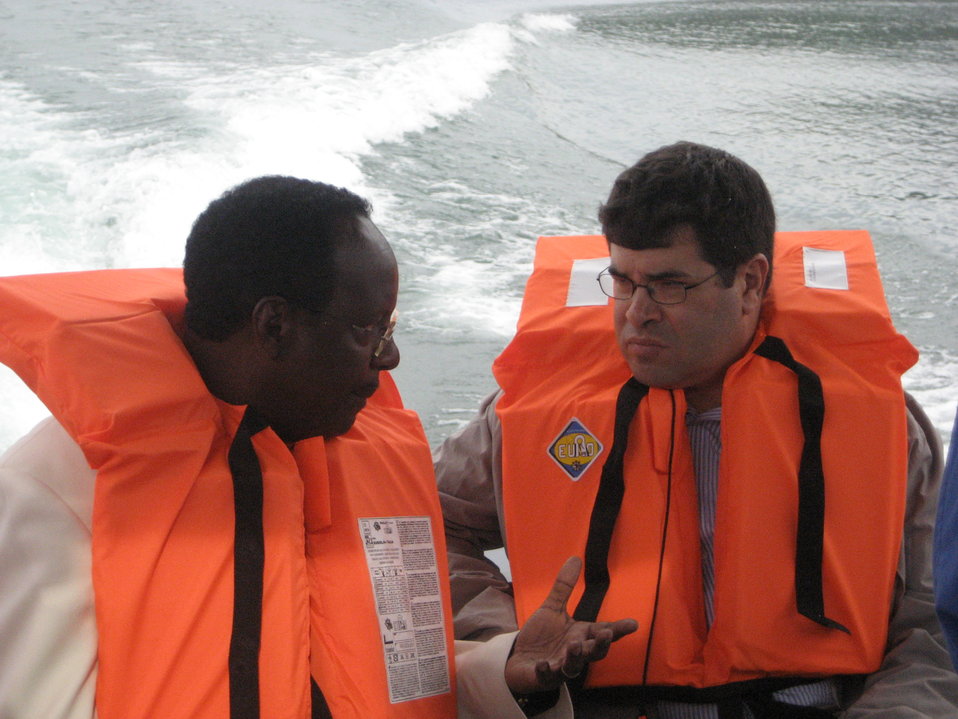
Deputy Secretary Neal Wolin’s trip to Africa 2009

Deputy Secretary Wolin and Dr. Albert Butare, Rwanda State Minister for Energy, travel by boat to a methane power project at Lake Kivu, one of the African Great Lakes lying on the border between Rwanda and the Democratic Republic of Congo. The innovative pilot power plant, fueled by methane extracted from the lake, was financed by the Government of Rwanda and received technical support from the World Bank’s International Finance Corporation (IFC) and the African Development Bank.